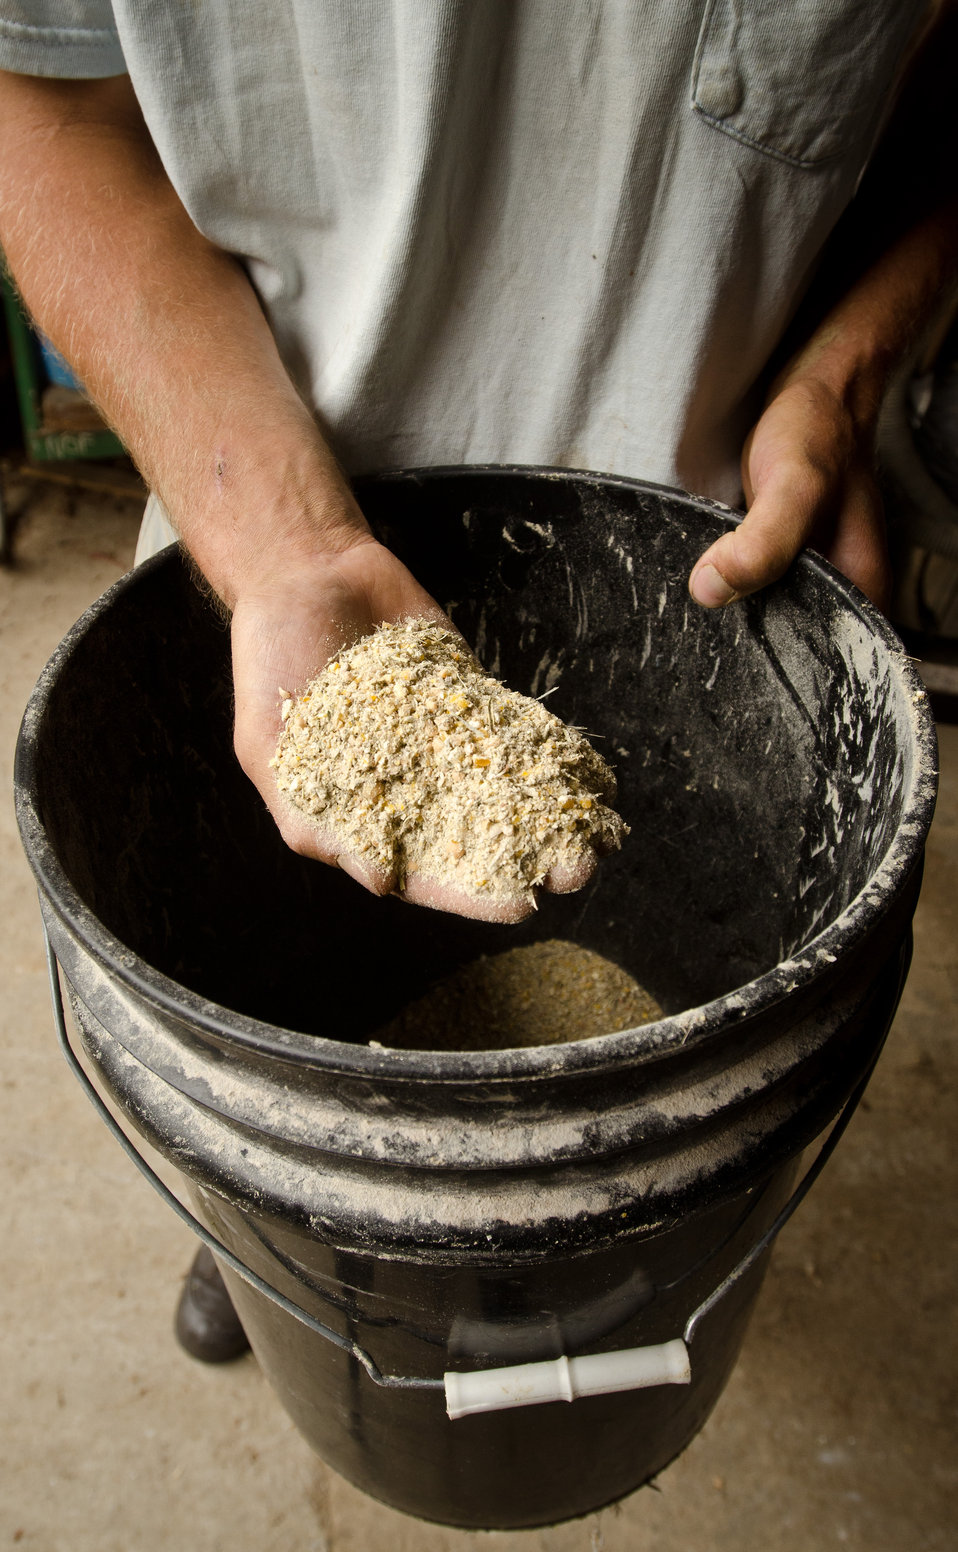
Organic feeds supplement the diet of layer and broiler chickens at Nick’s Organic Farm, in Adamstown, MD, on Friday, July 12, 2013. The farm, owned by Nick Maravell, produces Black Angus beef, chicken, turkey, eggs, hay, soybeans, corn, alfalfa, orchard grass, rye; and other crops. The cattle are100% grass-fed receiving certified organic pasture, certified organic hay (in winter), water and mineral salts mixed with sea kelp. The cattle are not fed hormones, antibiotics or animal products. Poultry feed from grain is ground from organic grain. The poultry also graze on organic pastures. The farm has conducted on-farm research with federal, state and non-profit agencies to refine organic practices. An organization such as the U.S. Department of Agriculture (USDA) Agricultural Research Service (ARS) center in Beltsville has been able to conduct research to improve organic crops and to breed and manage the cattle so that they have.